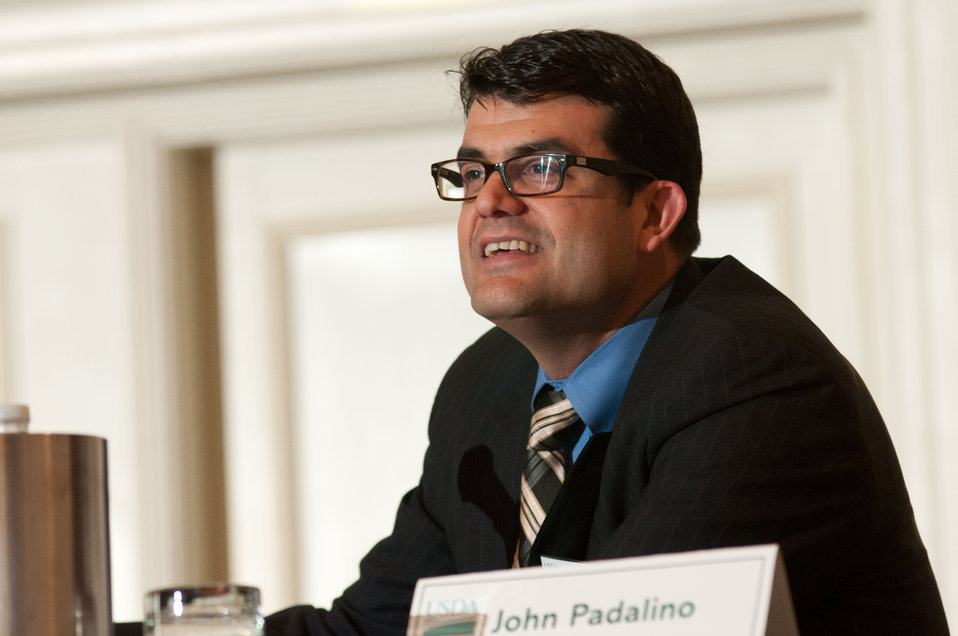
The U.S. Department of Agriculture (USDA) Rural Development Rural Utilities Service (RUS) Administrator John Padalino, right, moderates Energizing Rural Economies breakout session of the 2013 Agricultural Outlook Forum held at the Crystal Gateway Marriott Hotel in Arlington, VA on Friday, Feb. 22, 2013. The panel discussed the expanding capital available for rural investments that will help deliver the tools and technologies to meet energy, telecommunications, and business needs for the rural economy to grow. Rural Development programs and services can help rural consumers increase productivity, efficiency, and innovation, which can expand domestic an foreign markets, reduce costs, help diversify and strengthen rural economies.